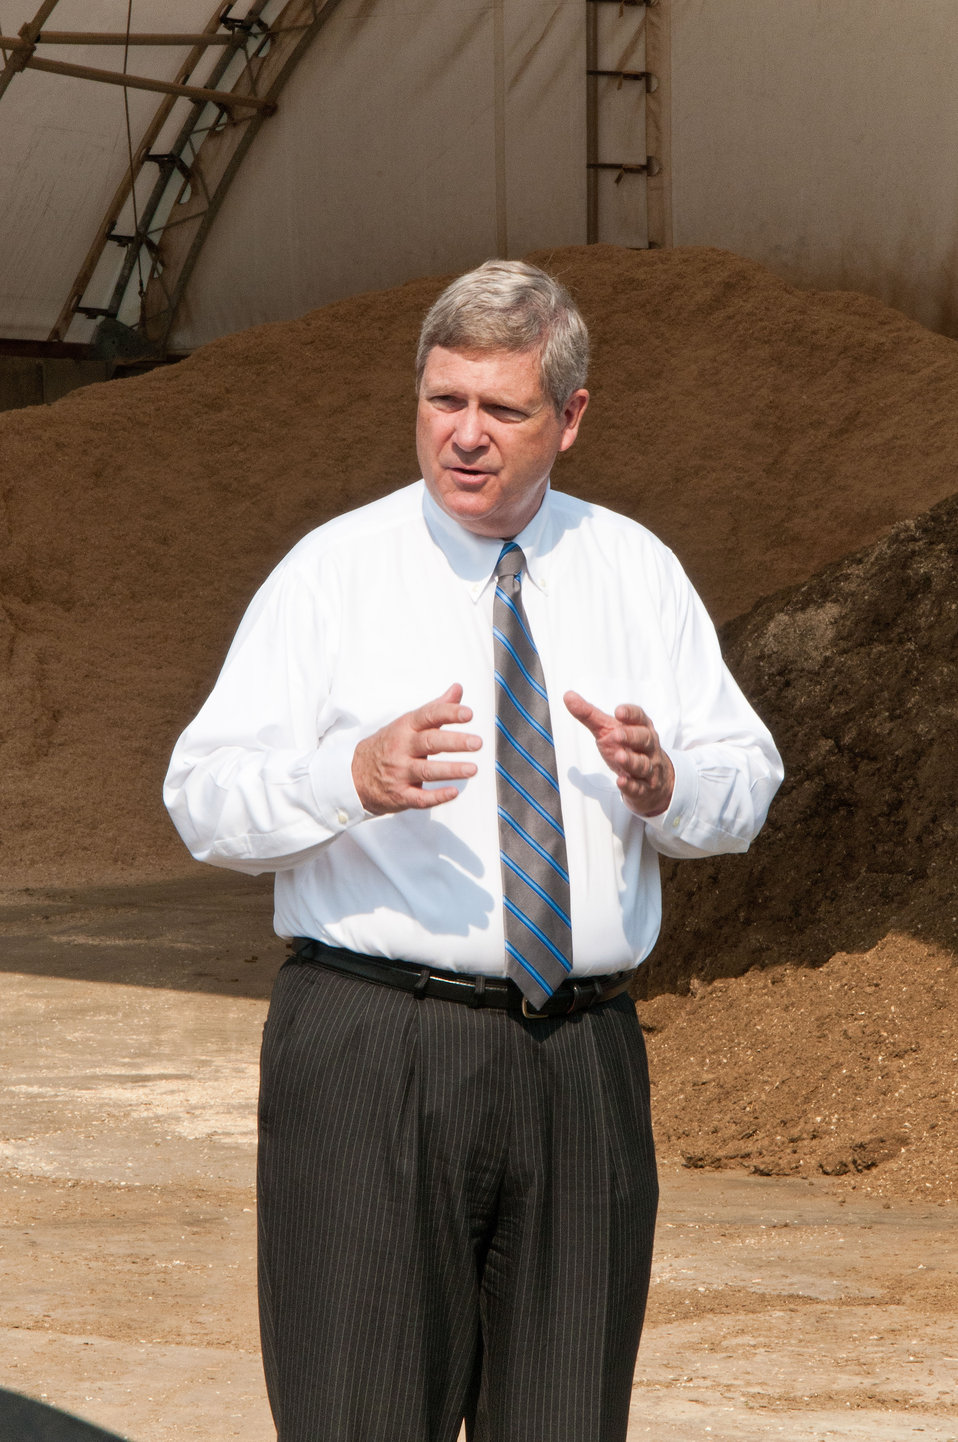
Agriculture Secretary Tom Vilsack visited Pennwood Dairy Farms in Berlin, PA on Tuesday, July 17, 2012. During his visit Secretary Vilsack highlighted the U.S. Department of Agriculture’s (USDA) energy efficiency programs and announced a new effort to help rural consumers make affordable, energy-efficient improvements to their homes and businesses. He also discussed the economy of rural America, the drought and the next Farm Bill.